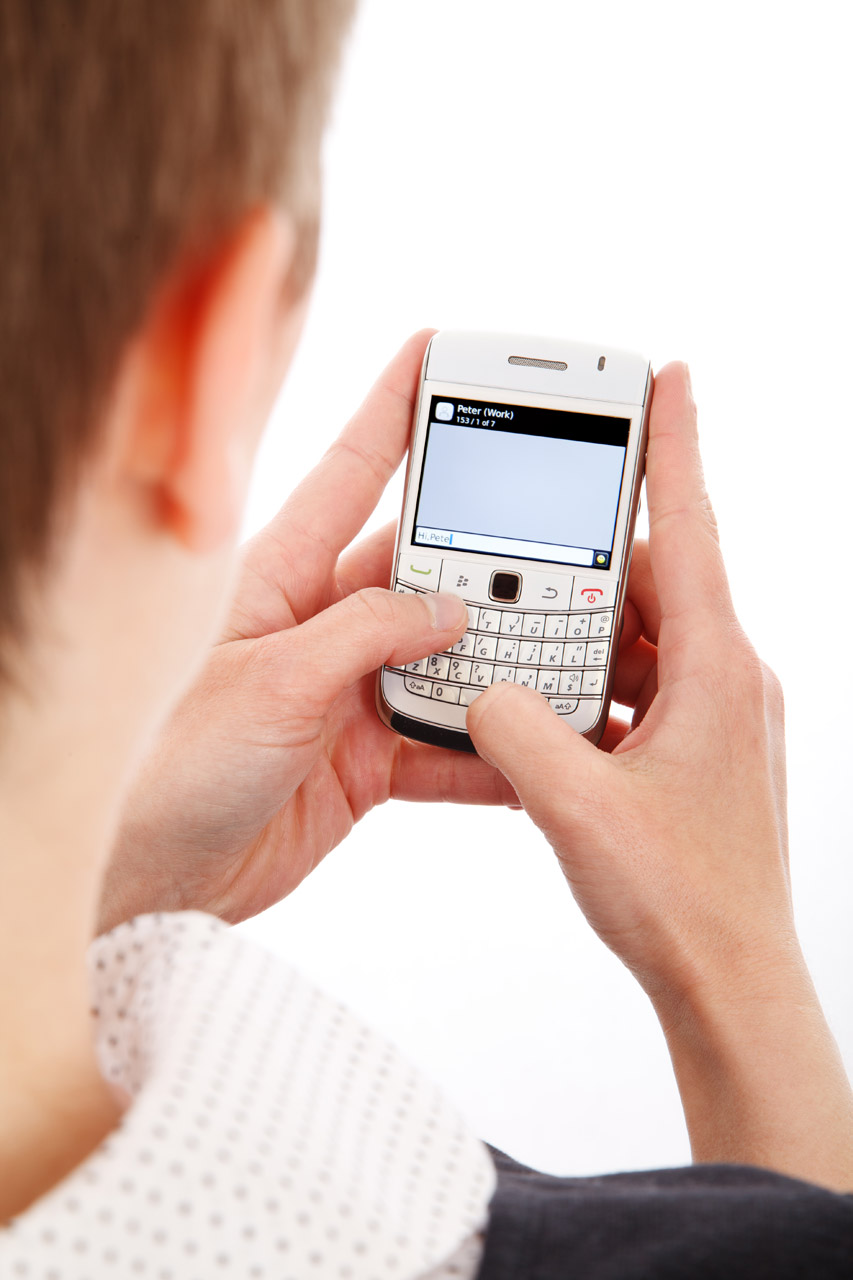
Woman texting

Young woman writing a text message on blackberry smartphone.